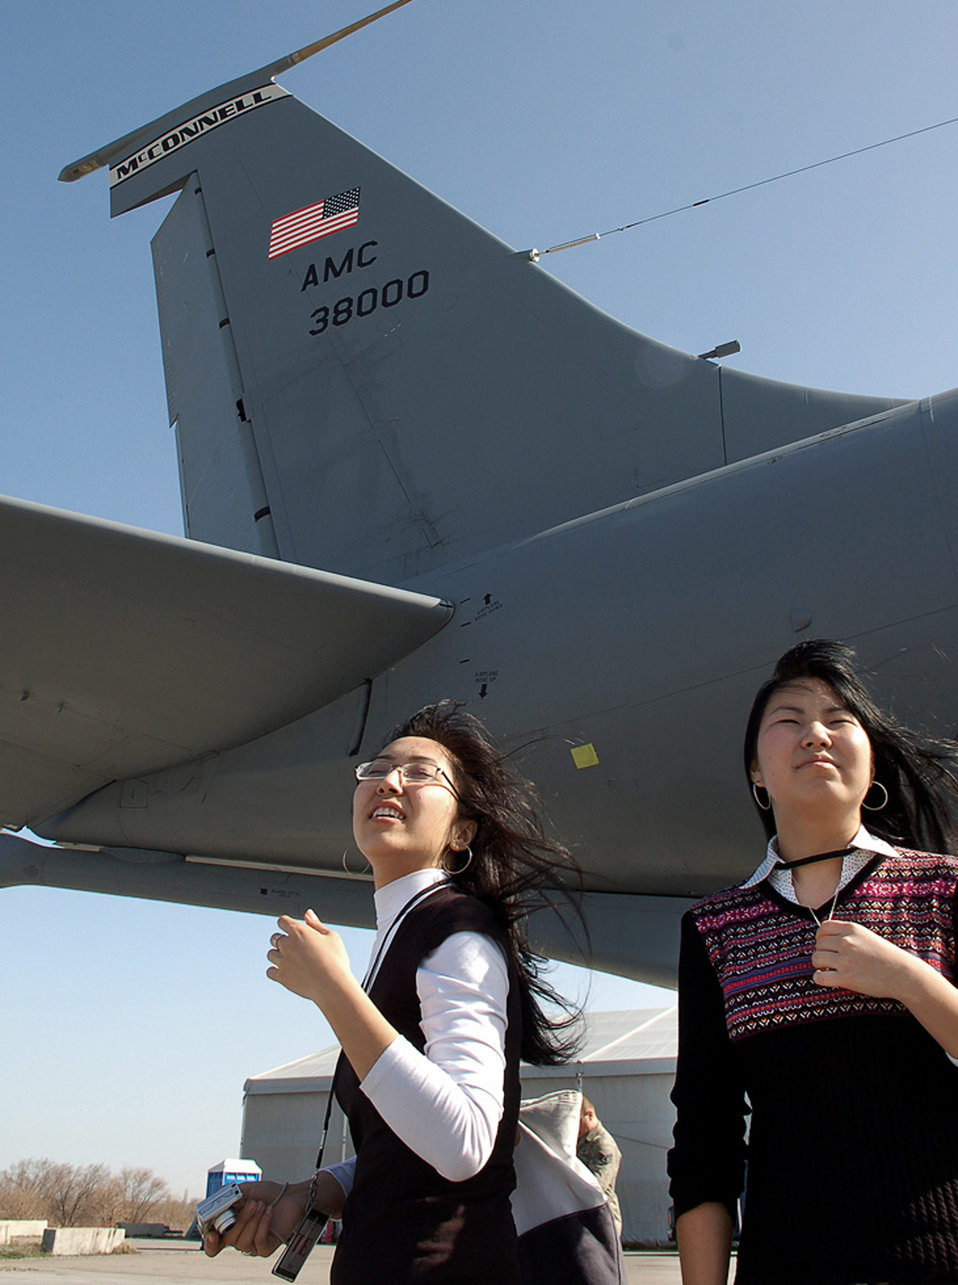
Kyrgyz students get insiders' glimpse of Manas mission

Jangyl Ismailova and Asel Botpayeva explore the flightline and the fleet of KC-135 Stratotankers March 26 at Manas Air Base, Kyrgyzstan. Ms. Ismailova and Ms. Botpayeva were two of 13 students from the American University of Central Asia in Bishkek who visited Manas AB with other students and faculty for an orientation tour and dinner hosted by the 376th Air Expeditionary Wing Public Affairs office.